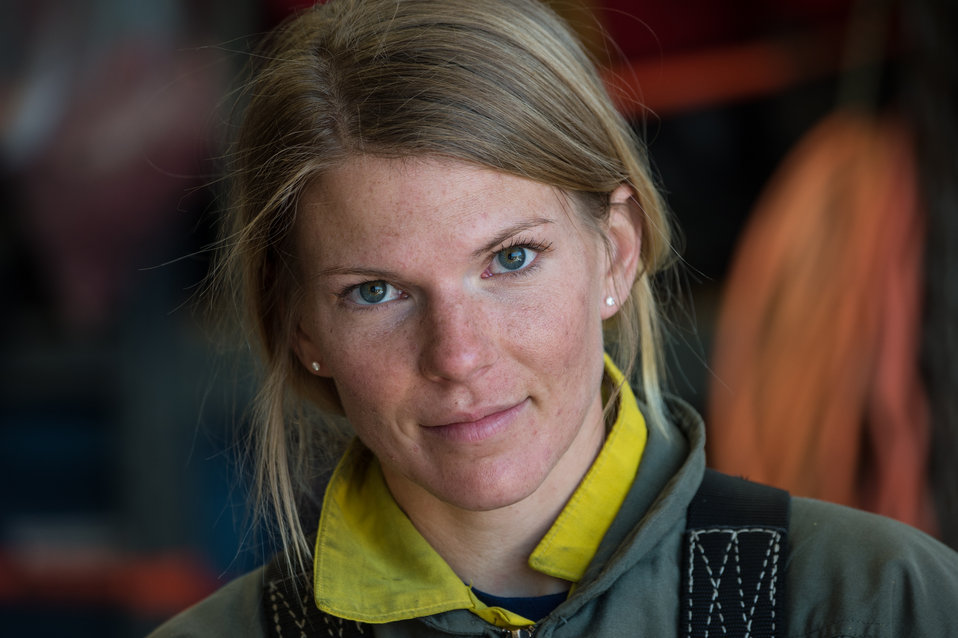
Veteran wildland firefighter rappeller Brianna Carollo attends the U.S. Department of Agriculture (USDA) U.S. Forest Service (USFS) National Helicopter Rappel Program’s Rappel Academy at Salmon Air Base in Salmon, ID on Wednesday, May 14, 2014. From May 12, 2014, 72 veteran rappellers from all over the nation, 30 support staff, and three helicopters with flight crews attend the training at Salmon Air Base. Participants will rappel into the Perreau Creek area. The annual training is delivered in accordance with the National Rappel Operations Guide; strengthen leadership, teamwork, and communications within the rappel community, and produces quality aerial delivered firefighters for use in fire and aviation operations. The USDA Forest Service National Helicopter Rappel Program’s primary mission is initial attack. Rappel crews may be utilized for large fire support, all hazard incident operations, and resource management objectives.